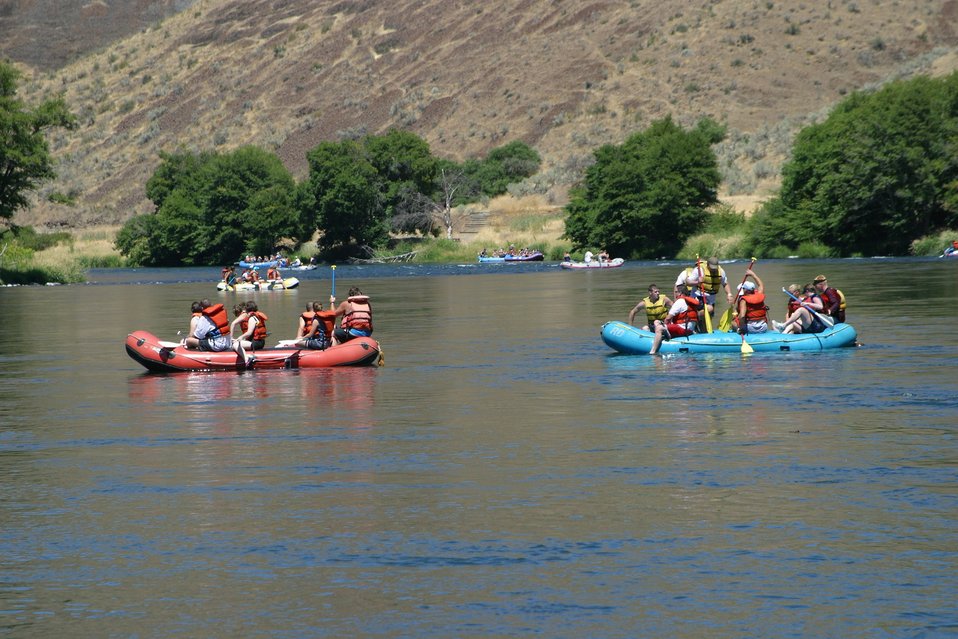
Looking down river from the Blue Hole accessible floating platform.